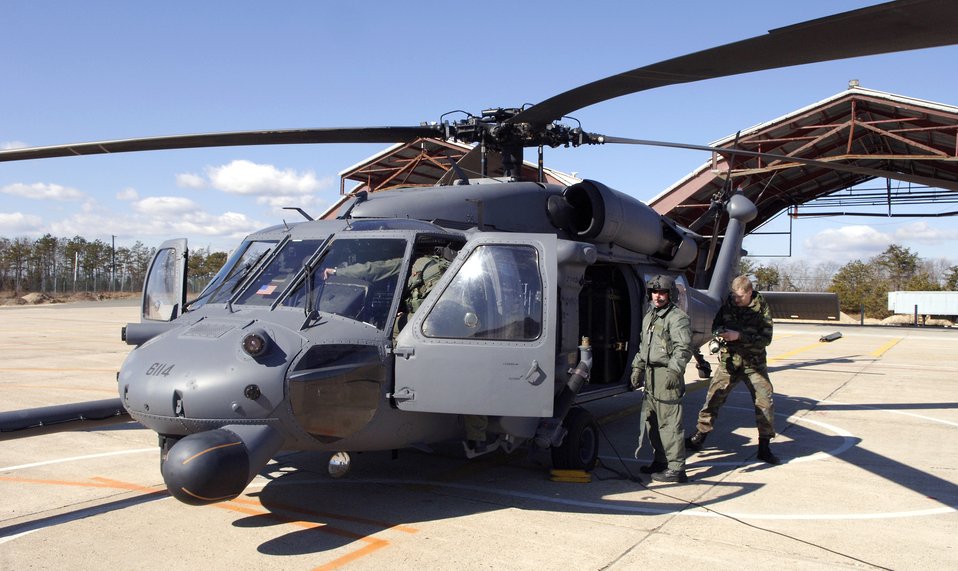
Guard wing makes mark on history

A crew from the New York Air National Guard's 101st Rescue Squadron at Francis E. Gabreski Field prepares their HH-60 Pave Hawk for a training mission.